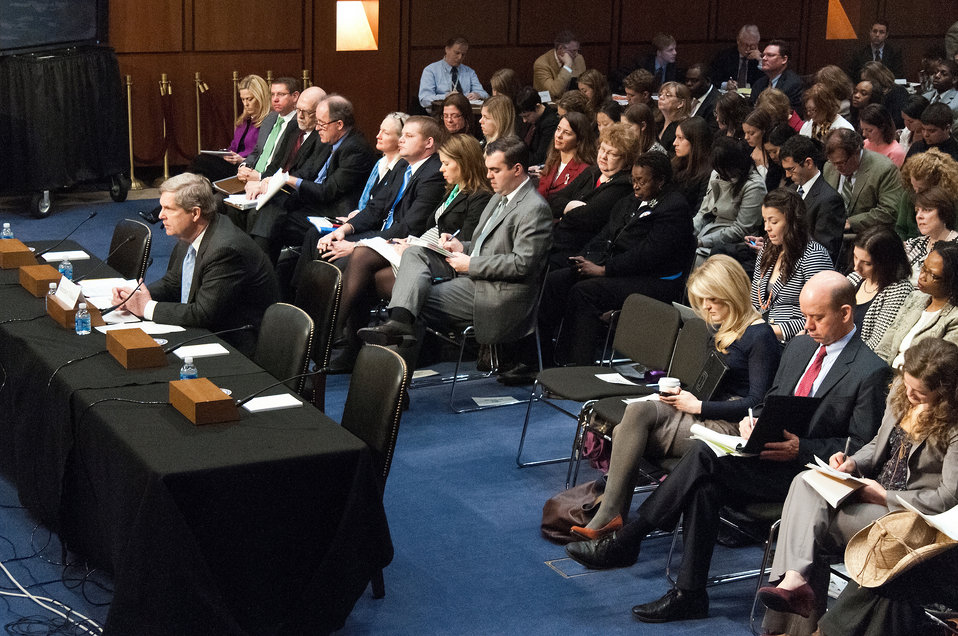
Agriculture Secretary Tom Vilsack testified on “Healthy Food Initiatives, Local Production and Nutrition” before the Senate Agriculture Committee on Wednesday, March 7, 2012 in Washington, D.C.